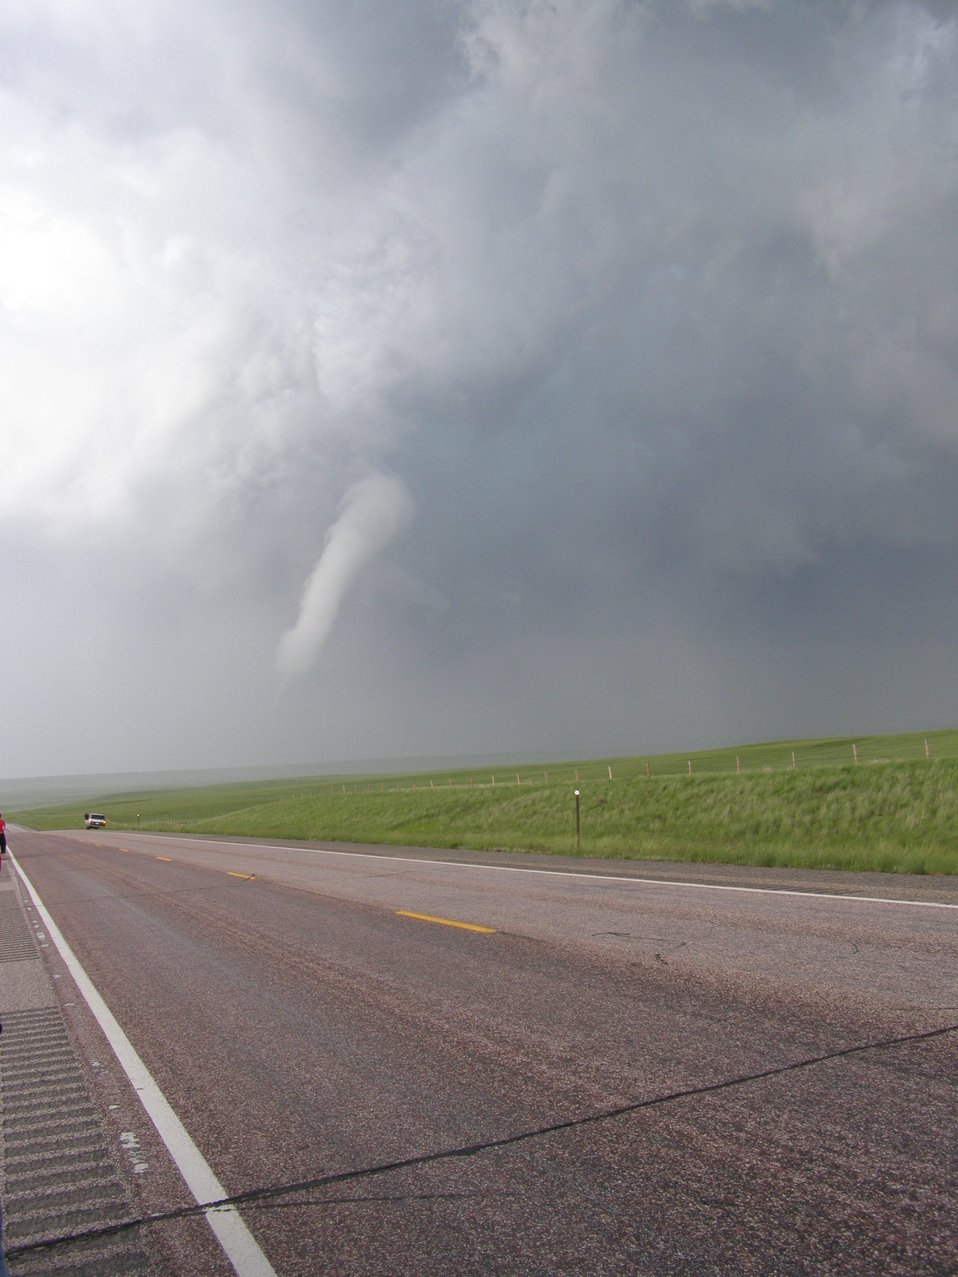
VORTEX2 intercepts a tornado in SE Wyoming on June 5, 2009.